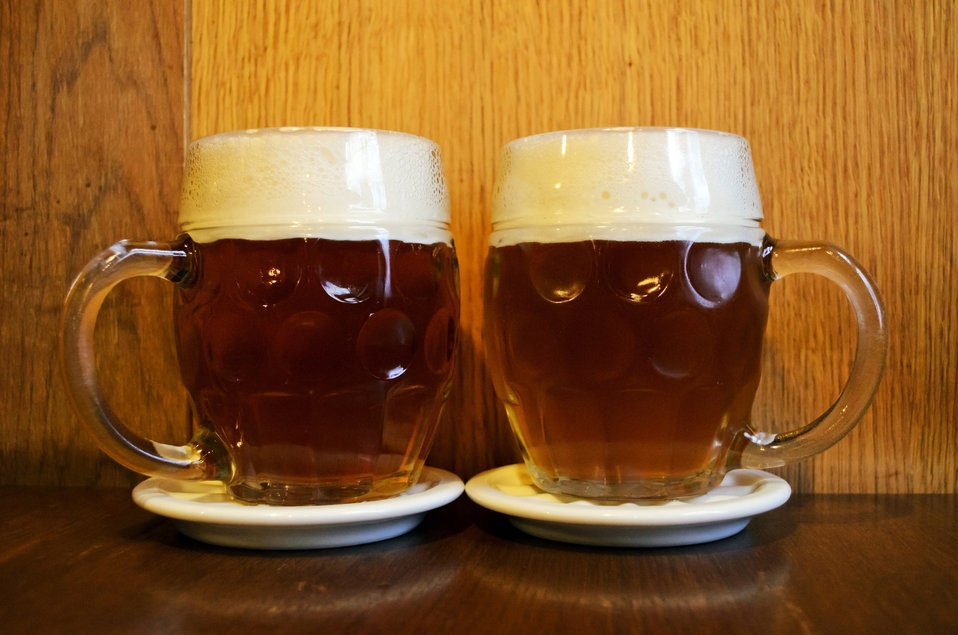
Beer - background.